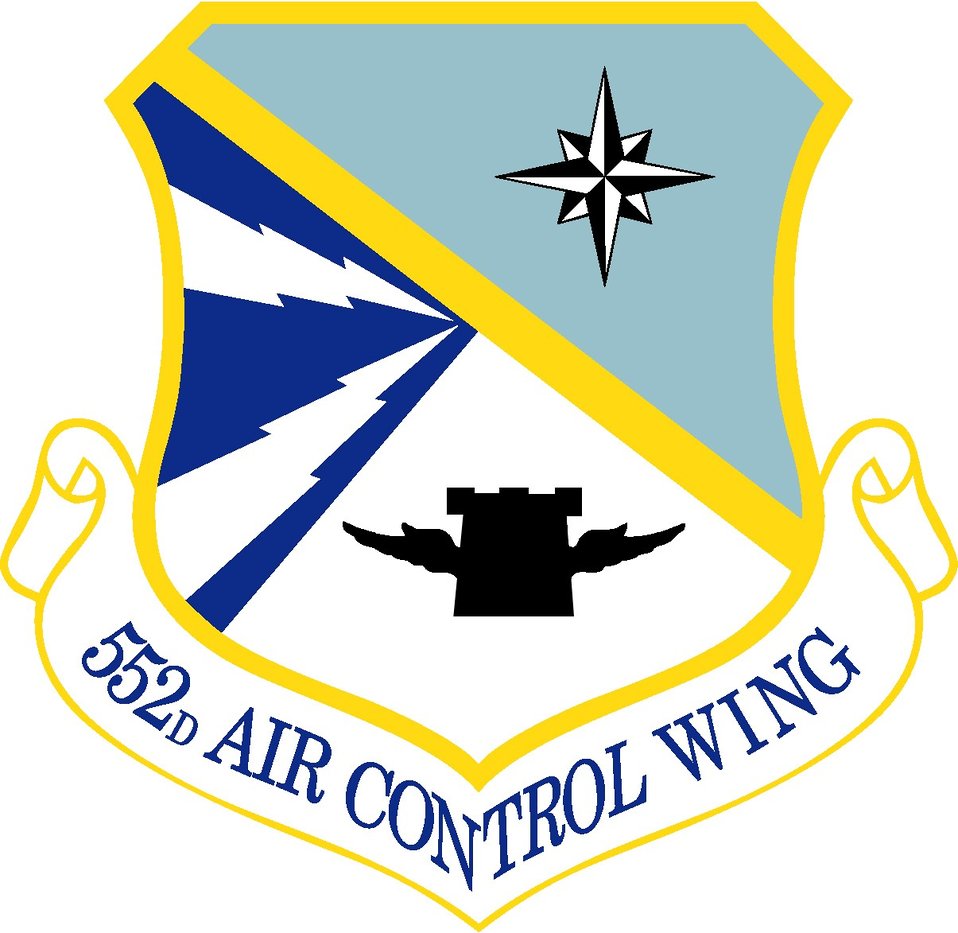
552nd Air Control Wing shield